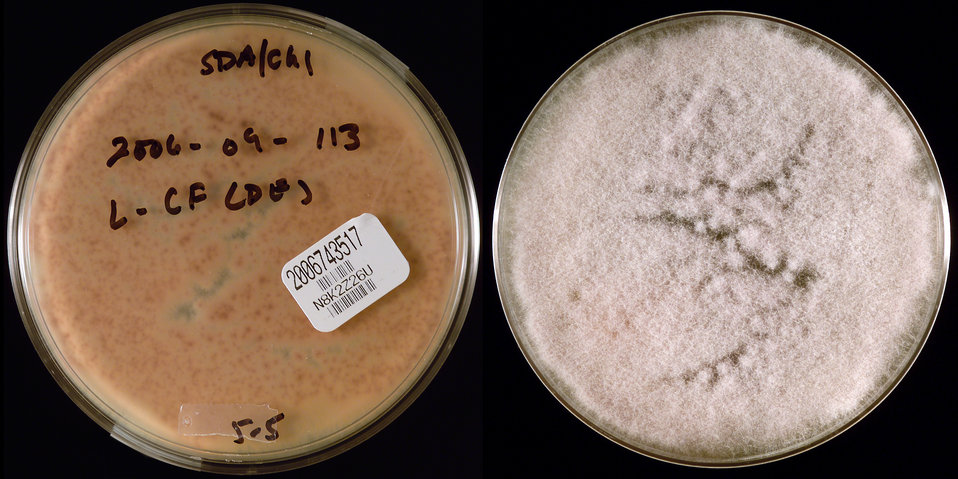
This image depicted two sides of a Petri dish, which had been inoculated with a specimen retrieved from the fluid from the inside of the left side of a contact lens case, from a Minnesota Fusarium keratitis-patient, and had subsequently grown a filamentous colony of Fusarium fujikuroi species complex [FFSC] fungal organisms. The type of agar medium in the case of this specimen was Sabouraud Dextrose (SAB). While it is not unusual for Fusarium to cause keratitis, it was the number of affected individuals, which had increased dramatically, predominantly in persons wearing contact lenses, that had warranted this epidemiologic study. The laboratory received cultures which came from two sources: Fusarium spp. isolated from the eyes of patients with fungal keratitis, and cultures from contact lenses, cases and/or lens solution.